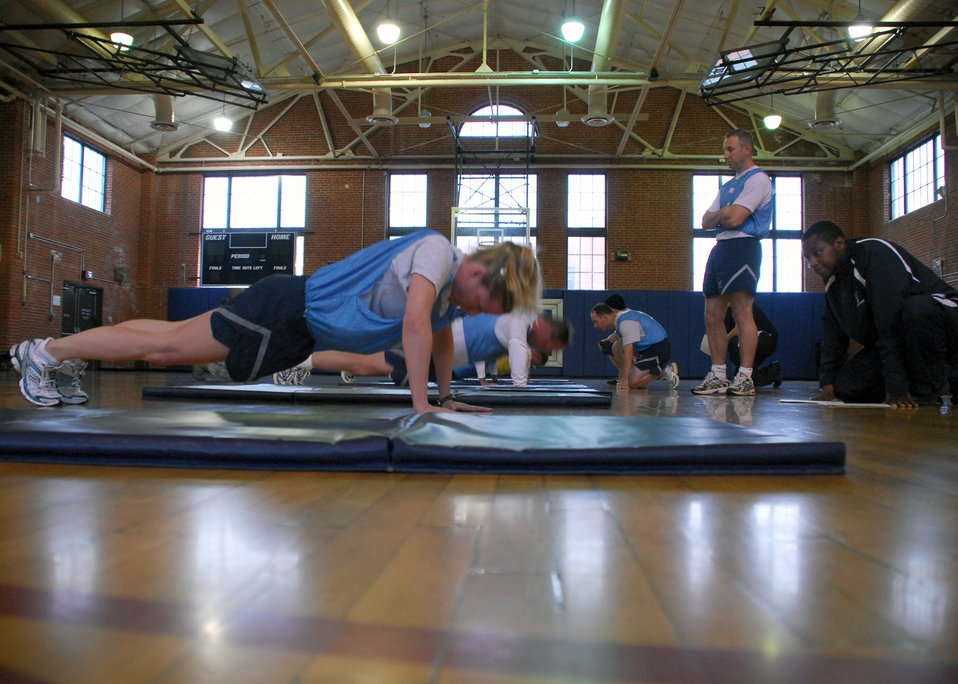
Airmen embracing fitness culture

Airmen perform pushups during an Air Force fitness test Oct. 19, 2010, at Joint Base Anacostia-Bolling, Washington D.C. The Air Force uses an overall composite fitness score and minimum scores per component based on aerobic fitness, body composition and muscular fitness to determine overall fitness.